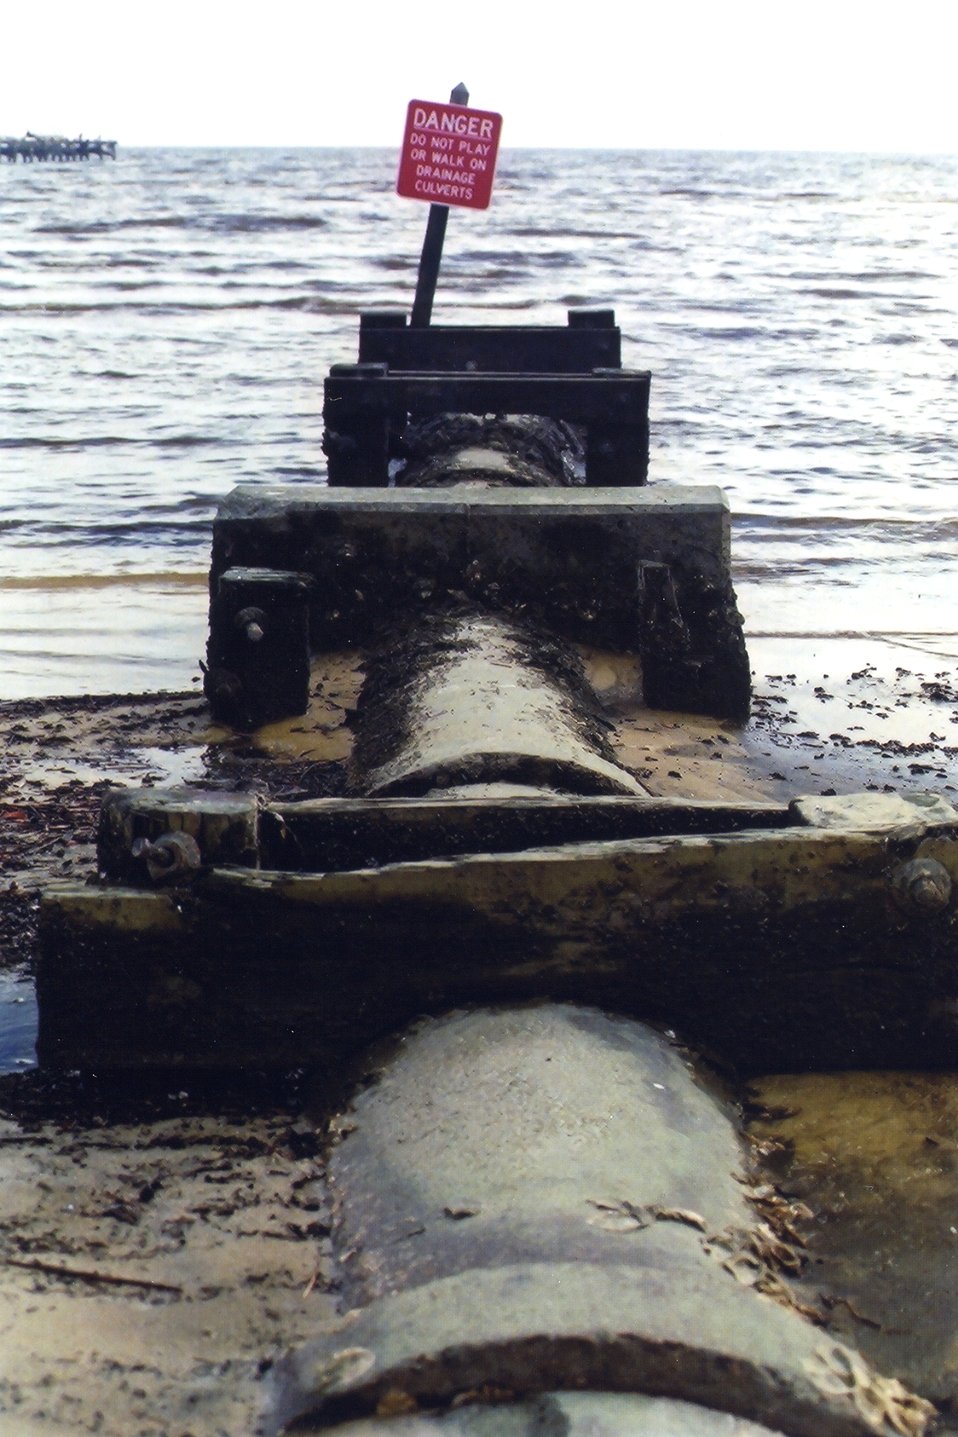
An outfall pipe entering the Gulf of Mexico.